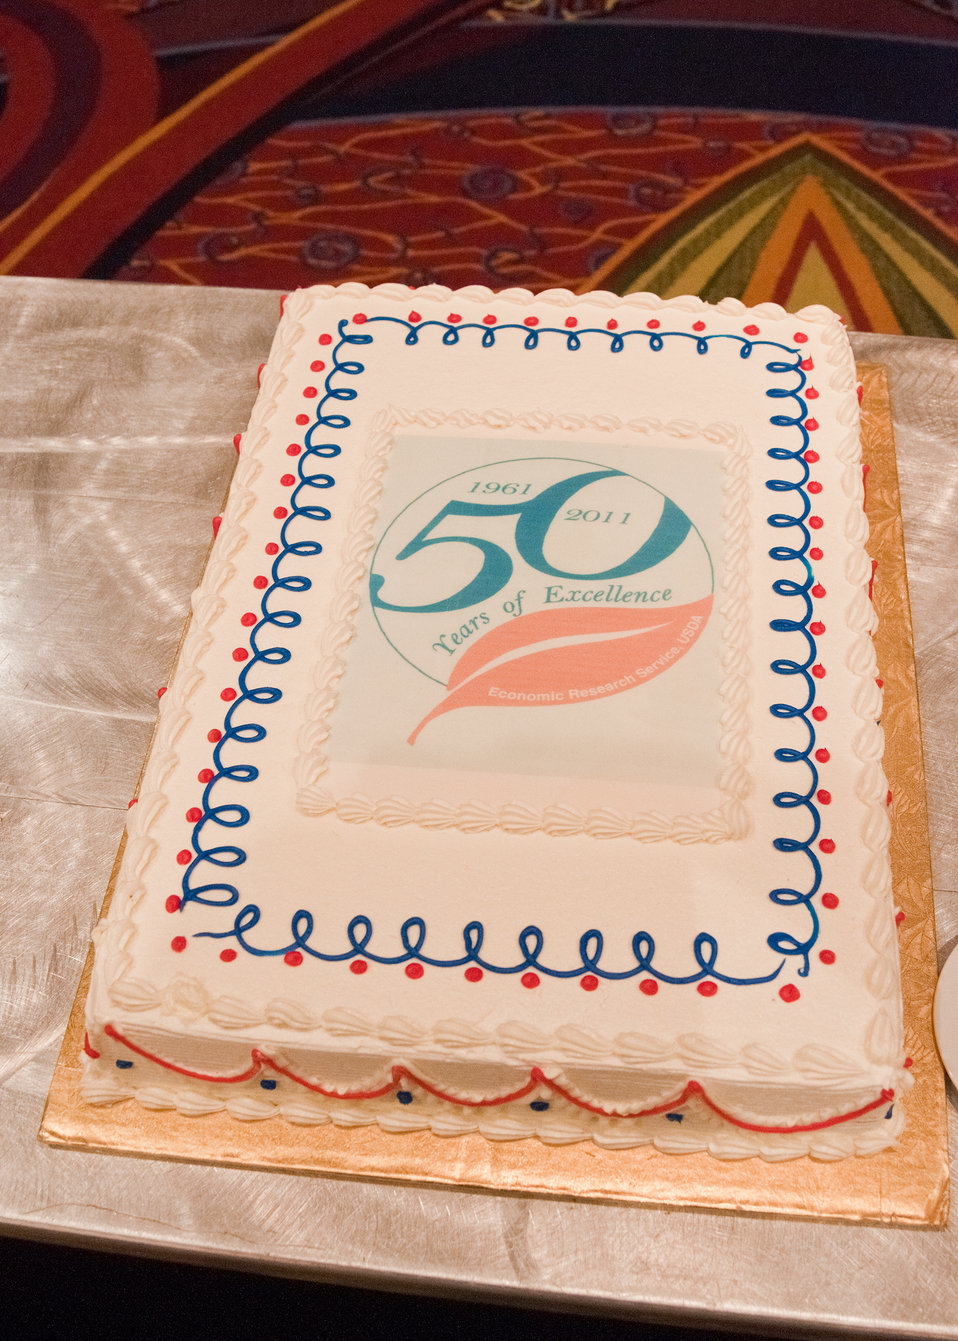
The Economic Research Service celebrated its 50th anniversary as a resource for policymakers at the World Agricultural Outlook Board Forum in Crystal City, VA, on Friday, February 25, 2011.